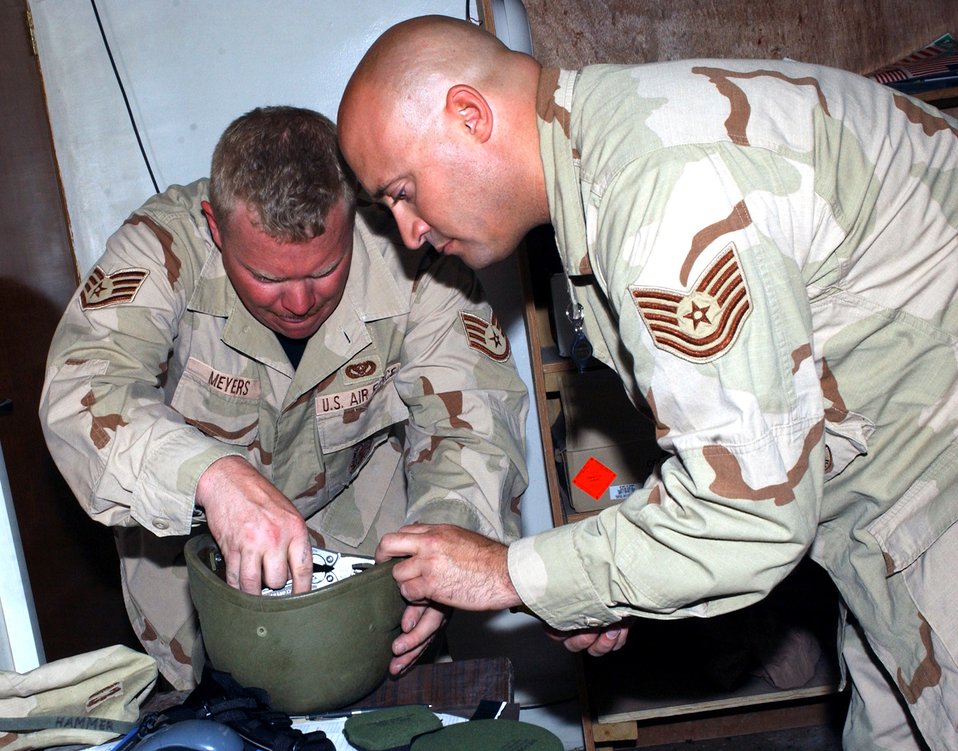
Firefighters get $10,000 in donated equipment

Staff Sgt. David Meyers (left) and Tech. Sgt. Paul Jacques install the ballistic liner suspension system upgrade in a Kevlar helmet at Ali Base, Iraq. The sergeants are firefighters assigned to the 407th Expeditionary Civil Engineer Squadron.